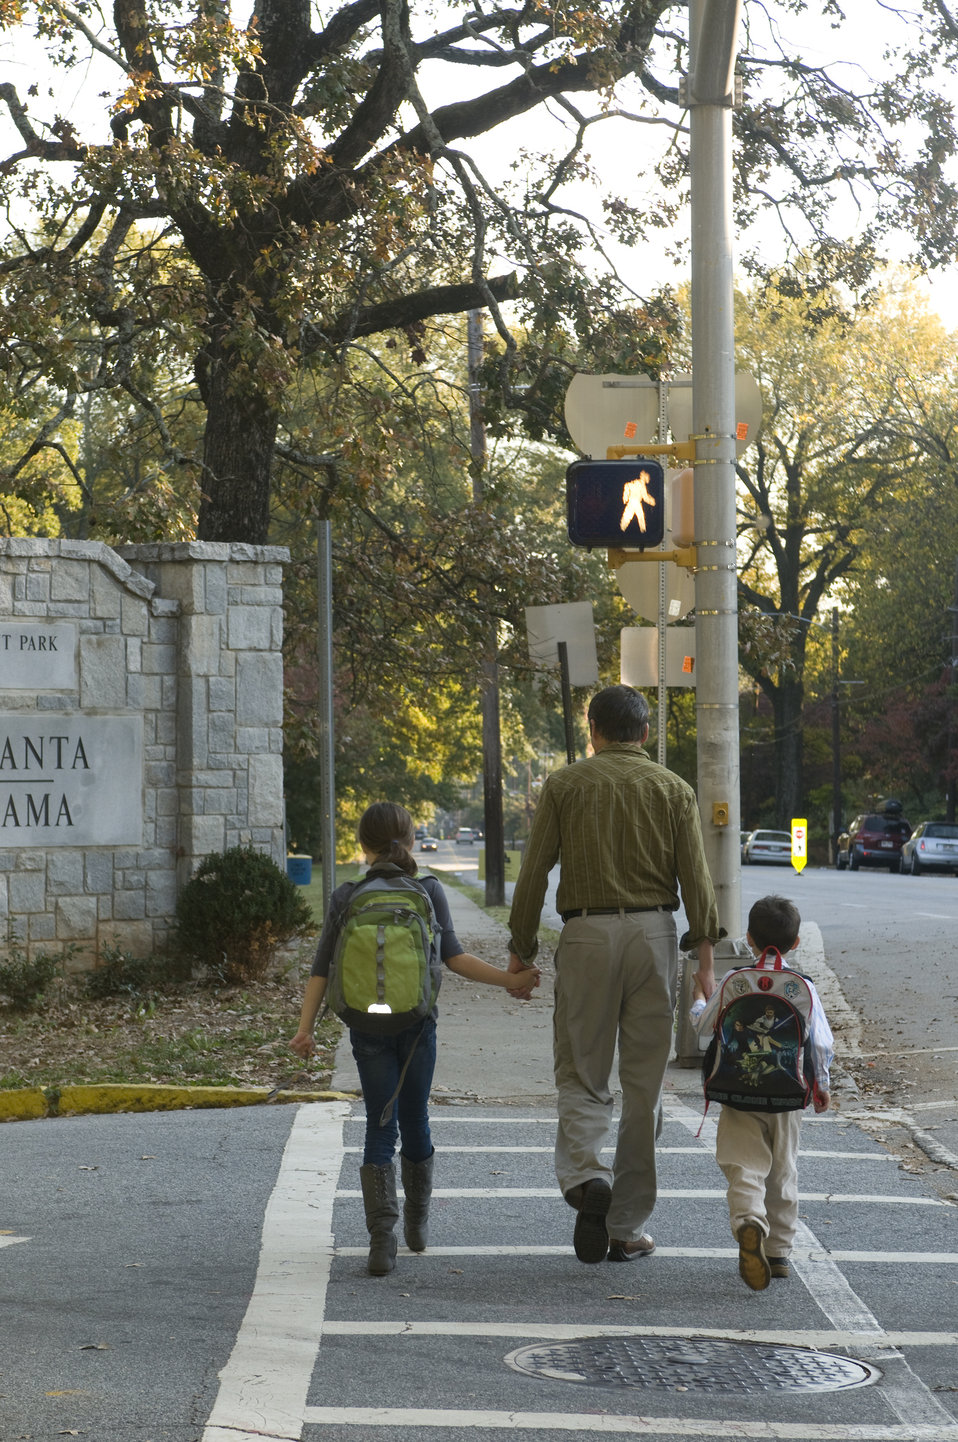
This father was shown walking on a Georgian city street, while holding hands with his two young children, his son to his right, and his daughter to his left. Having been given the green light to walk after pausing at an intersection, the three had entered the designated crosswalk. Adherence to the rules and regulations governing our roadways, as well as staying alert and focused on the activities taking place all around you, will make for a much safer walking experience, especially on a city street.